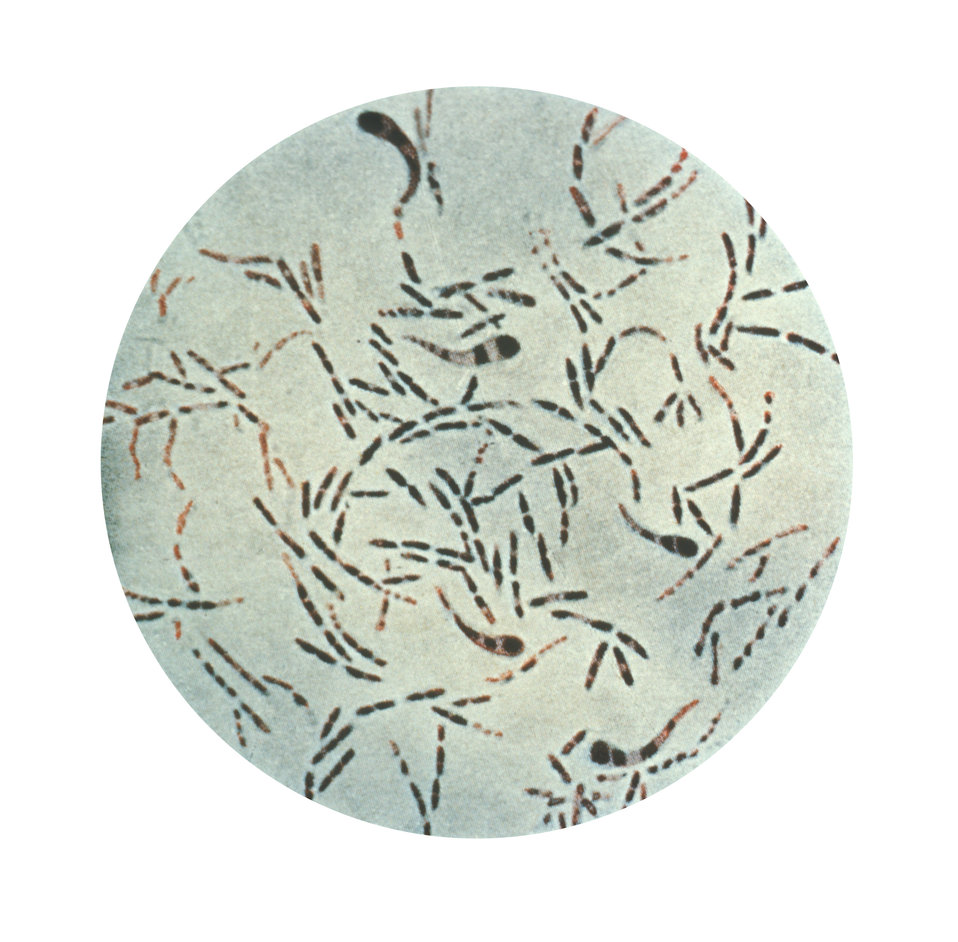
A photomicrograph of Corynebacterium diphtheriae bacteria using a Gram stain technique.